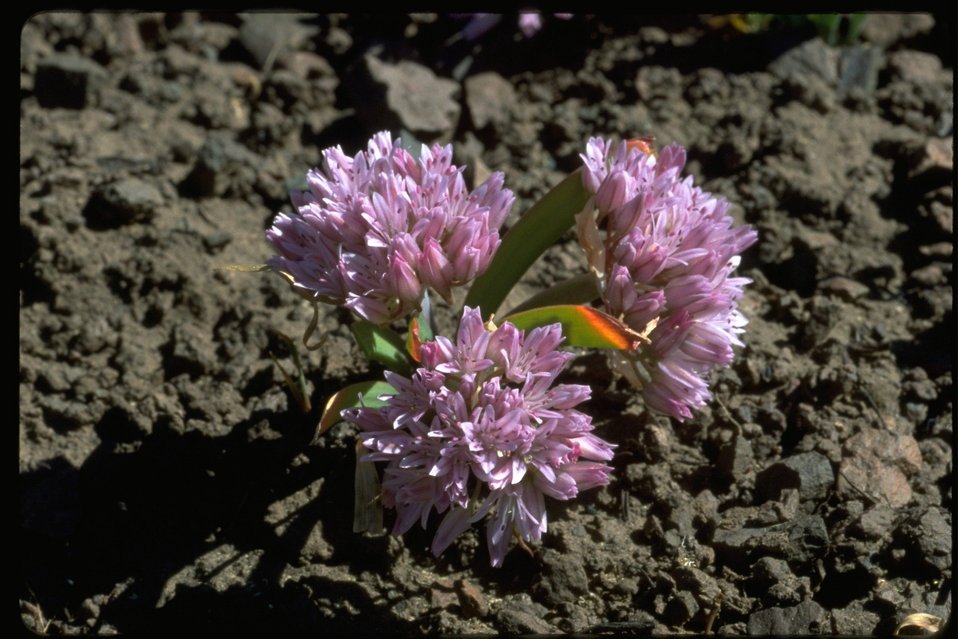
Medium shot of onion.